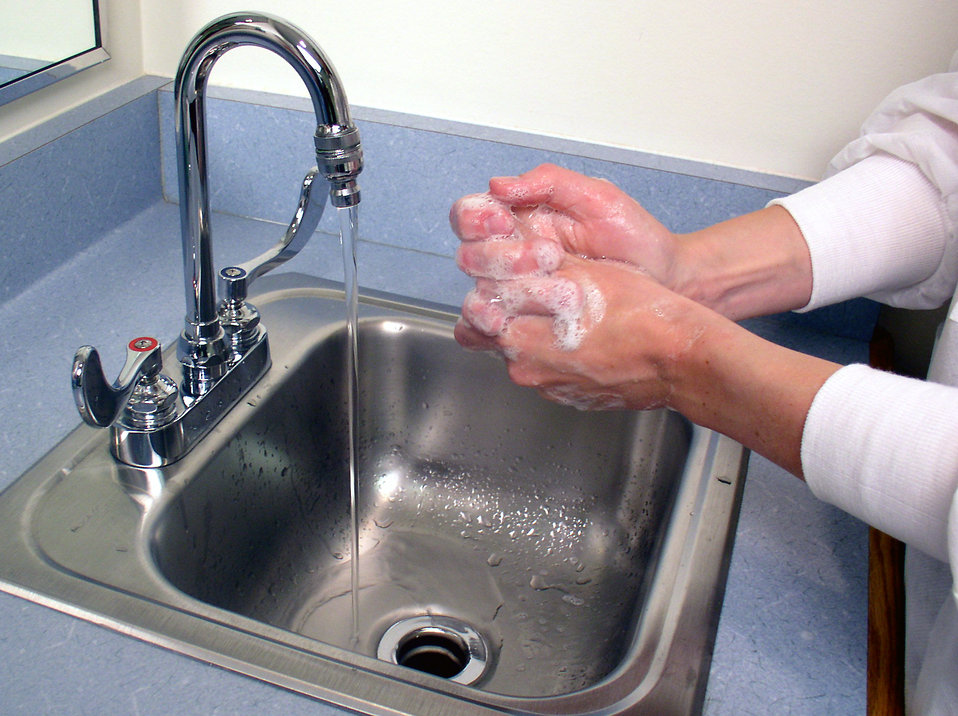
(Image 4 - Hand Washing Procedure) Laboratorians must apply soap to all the surfaces of both hands for at least 15 seconds.